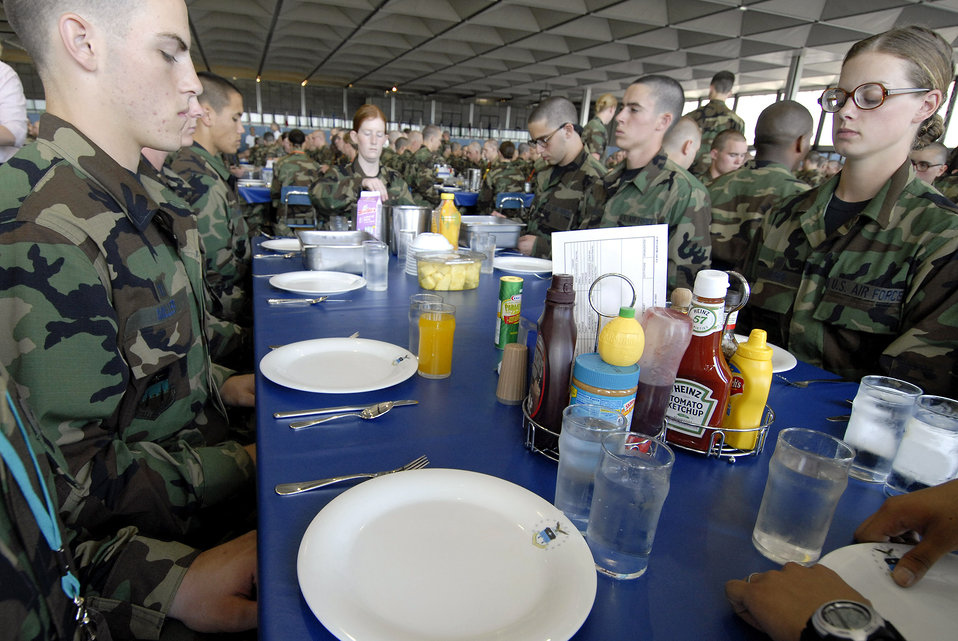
Eyes on the eagle

Basic cadet trainees must not take their eyes off the eagle on their plate as they prepare for their first lunch meal since arriving as the Class of 2011 June 29 at the U.S. Air Force Academy in Colorado. They are in the first half of basic cadet training, commonly known as